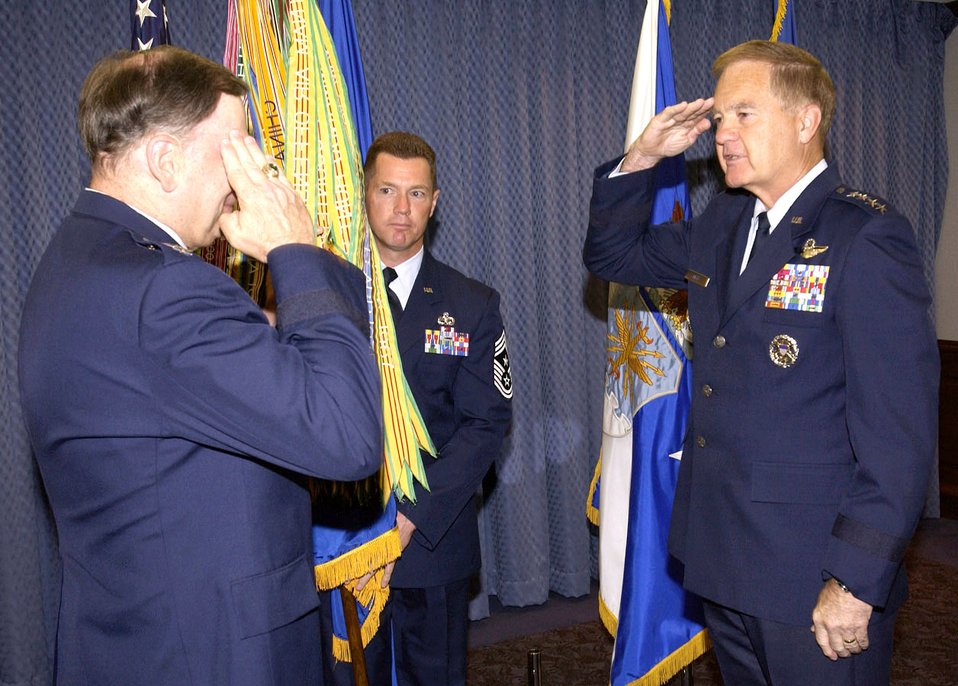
General Keys confirmed as ACC commander

WASHINGTON -- Gen. Ronald E. Keys (right) salutes Air Force Chief of Staff Gen. John P. Jumper as Chief Master Sgt. David Popp holds the guideon during an assumption of command ceremony here May 27. General Keys assumed command of Air Combat Command. Chief Popp is ACC's command chief master sergeant.